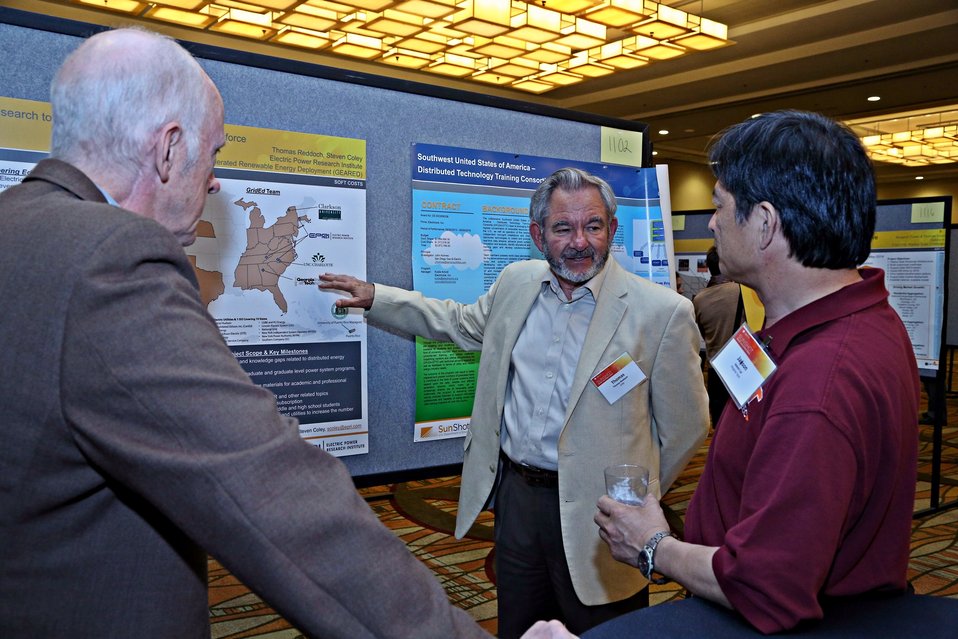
Tech Forum 28

Attendees and awardees discuss posters at the Tech Forum.